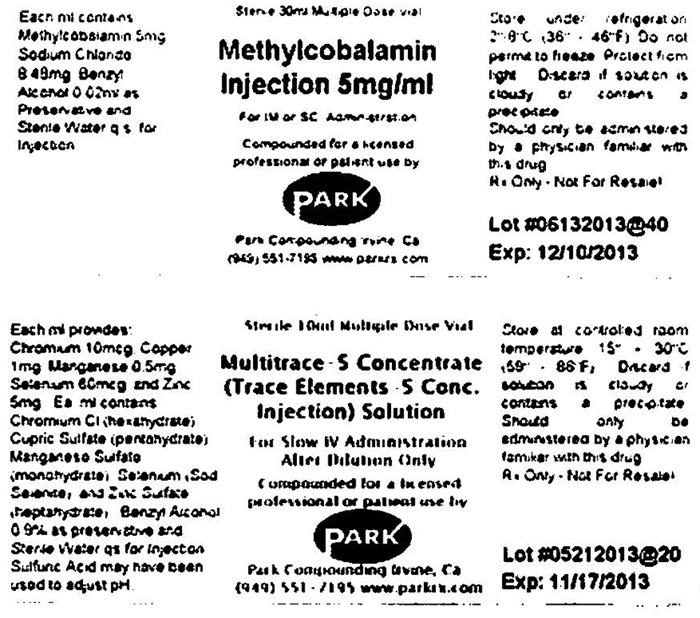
RECALLED – Methylcobalamin and Multitrace-5 Concentrate

August 23, 2013 – Product Recall – Park Pharmacy & Compounding Center is Issuing a Voluntary Recall of Two Compounded Sterile Preparations. The Recall is Due to a Lack of Sterility Assurance.